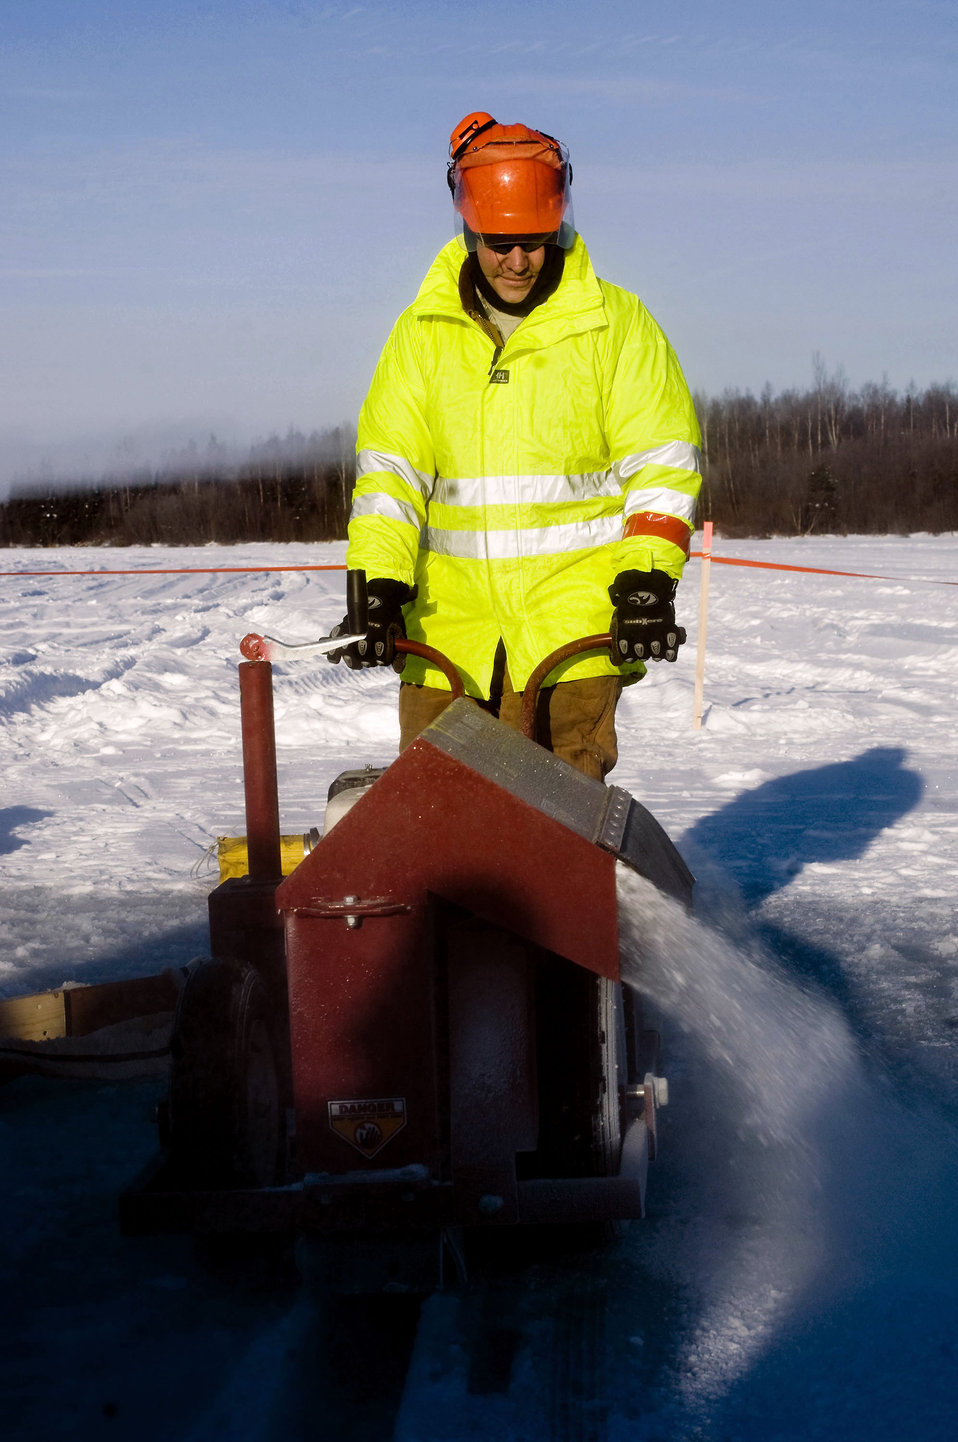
611 Civil Engineer Squadron preps for oil spill

Tech. Sgt. James Crosley cuts a trench from the ice Feb. 24 on Six-mile Lake at Elmendorf Air Force Base, Alaska. The trench is used to collect oil using a mop rope. Sergeant Crosley is from the 611th Civil Engineer Squadron.